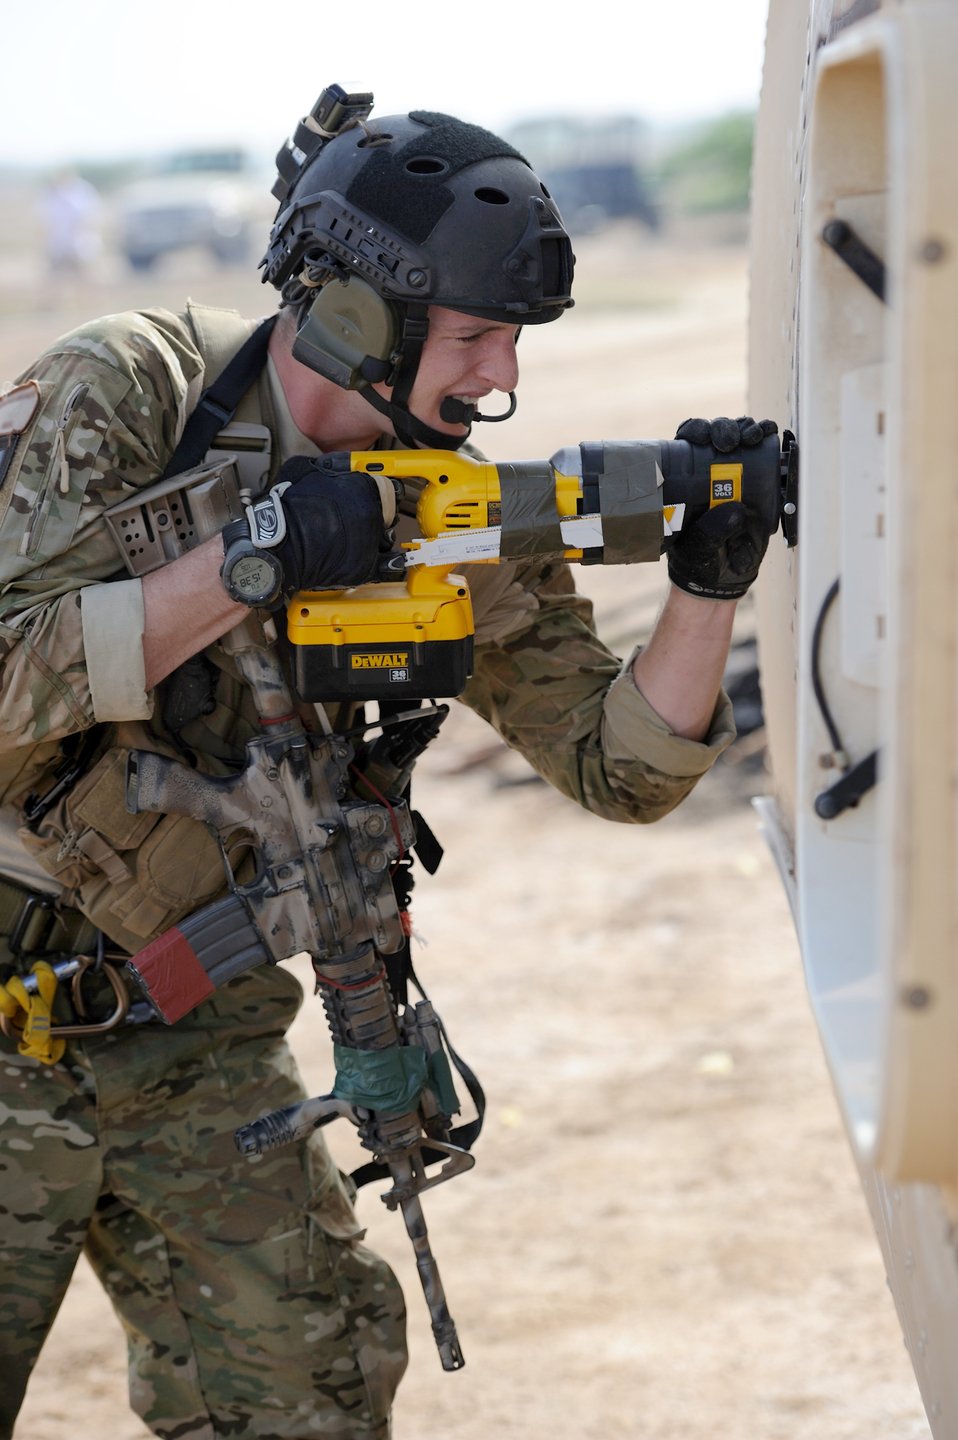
Airmen participate in African rescue exercise

At a combat search and rescue extraction exercise, a pararescueman works his way into the